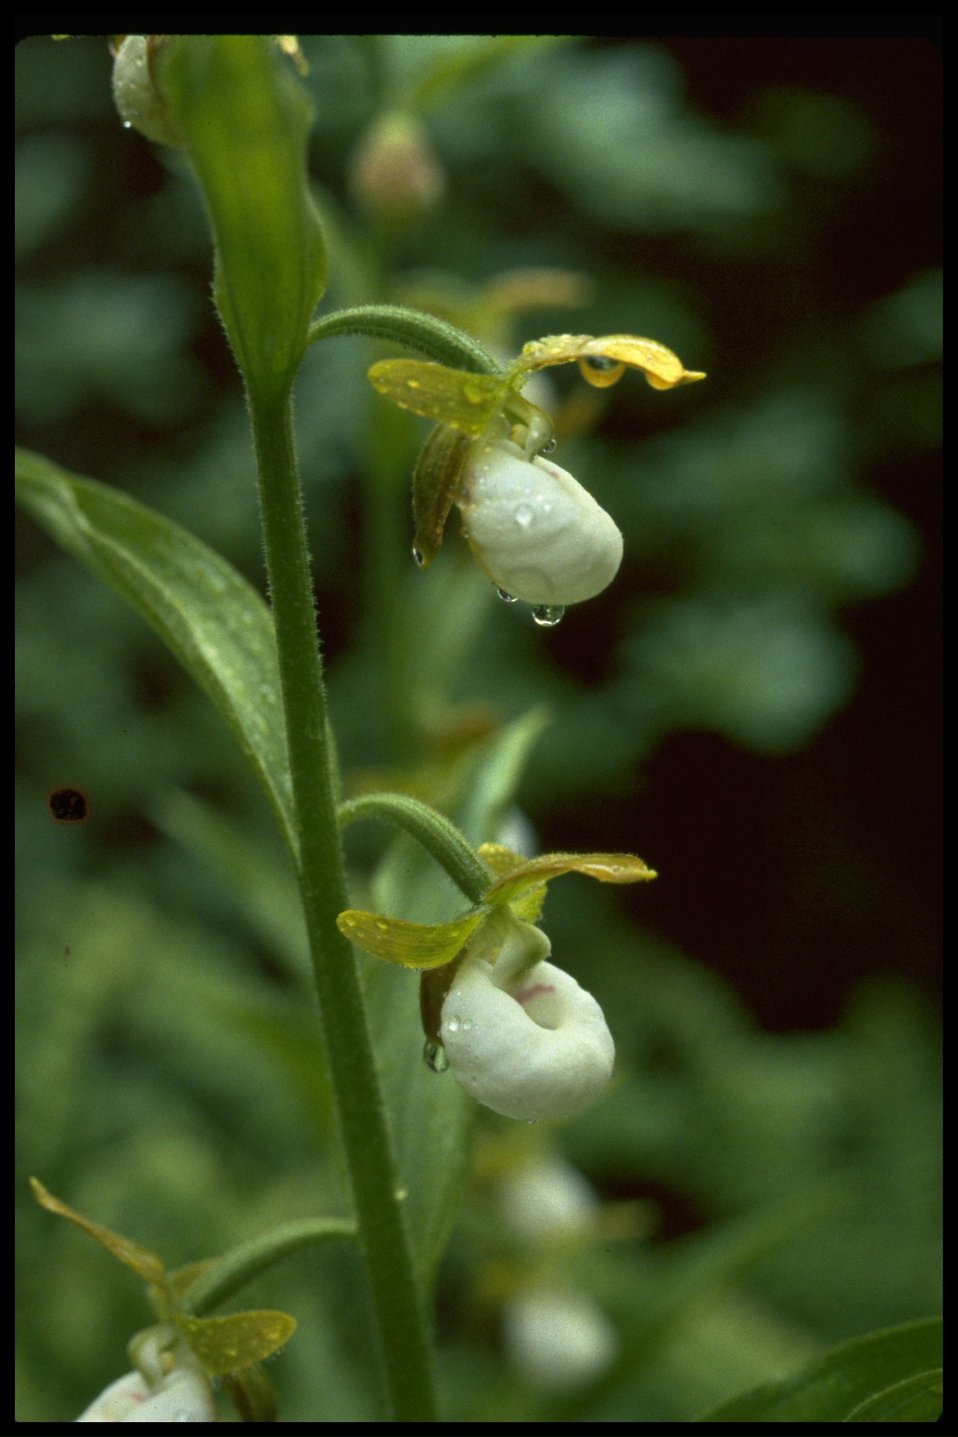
Closeup shot of California lady's slipper (Cypripedium californicum).